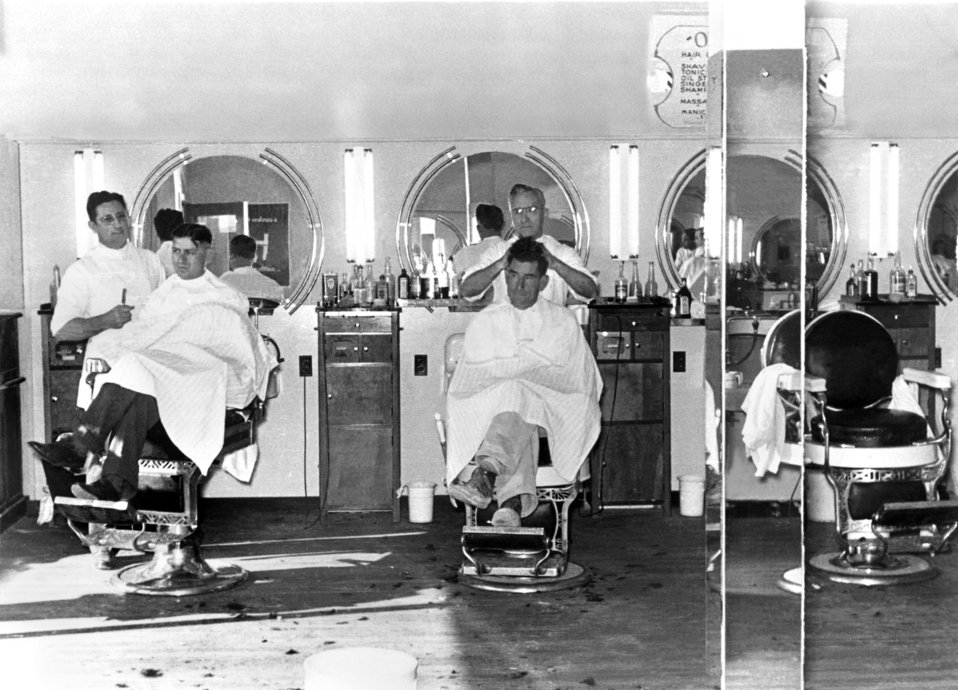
Barber Shop Oak Ridge

Roll117-7 DOE photo by Ed Westcott 11-4-1943 Oak Ridge Tennessee